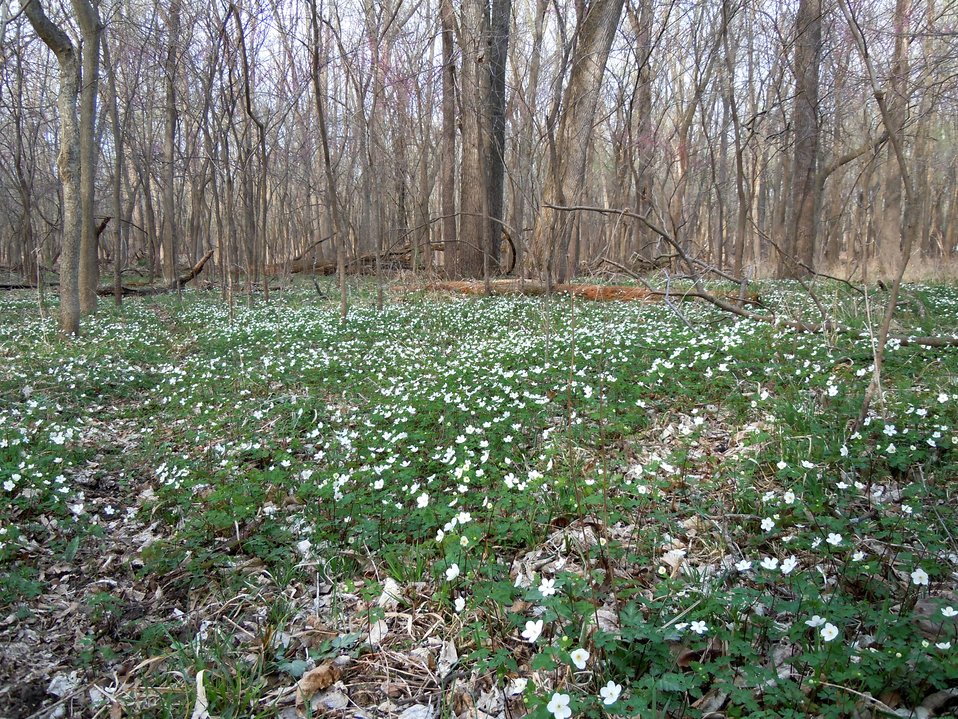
False Rue Anemone